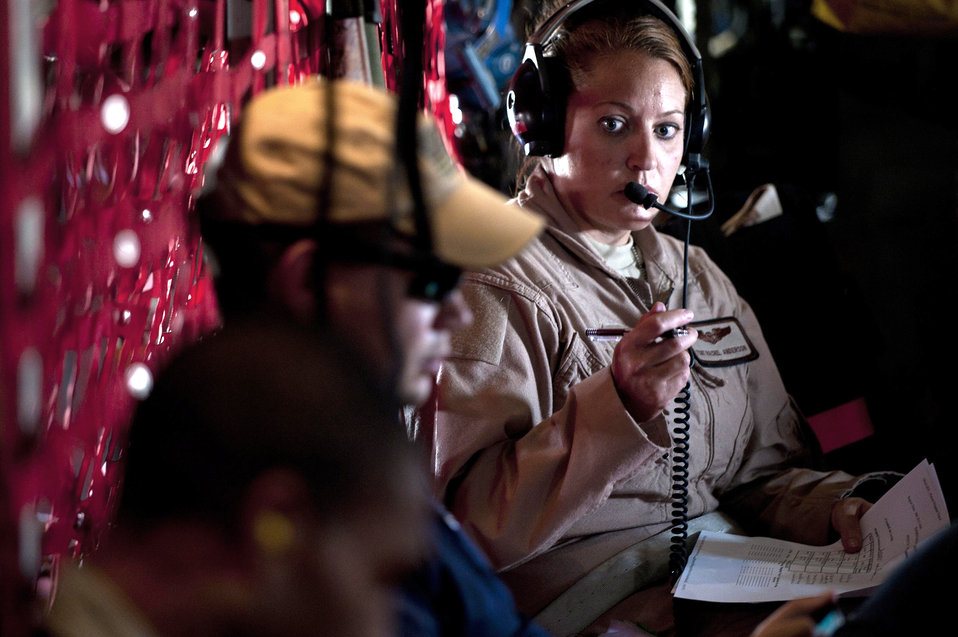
379th Expeditionary Aeromedical Evacuation Squadron

Tech. Sgt. Rachel Anderson talks to medical evacuation patients and fills out medical paperwork aboard a C-130 Hercules April 6, 2011, during an aeromedical evacuation mission in Southwest Asia. Sergeant Anderson is an aeromedical evacuation technician assigned to the 379th Expeditionary Aeromedical Evacuation Squadron.